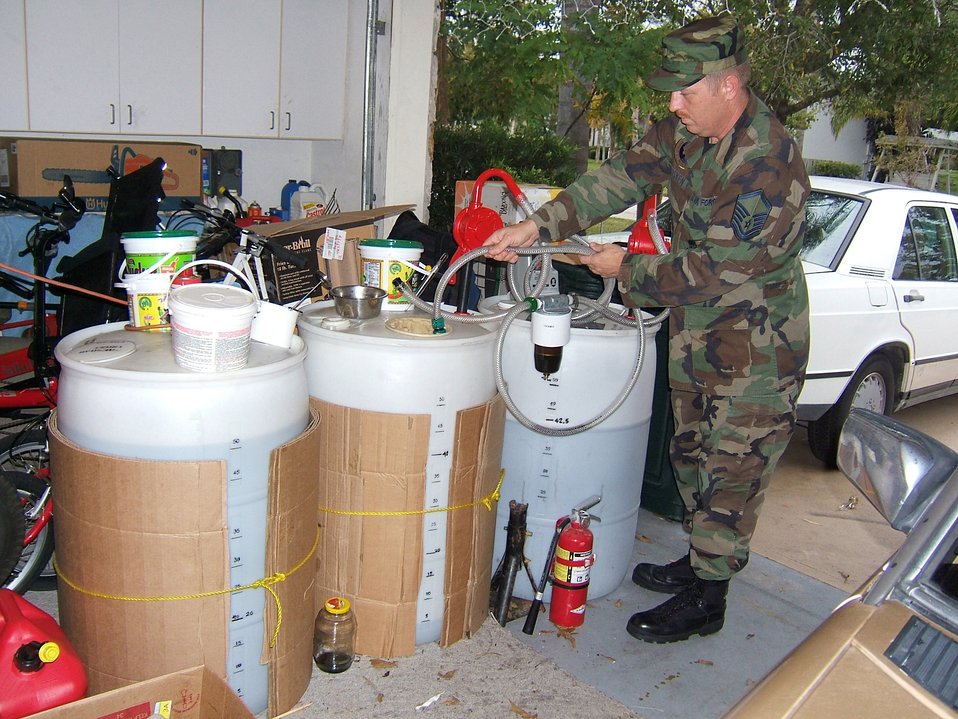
Oil run car

PATRICK AIR FORCE BASE, Fla. (AFPN) -- Master Sgt. Brian Hosken drains excess vegetable oil from a hose after